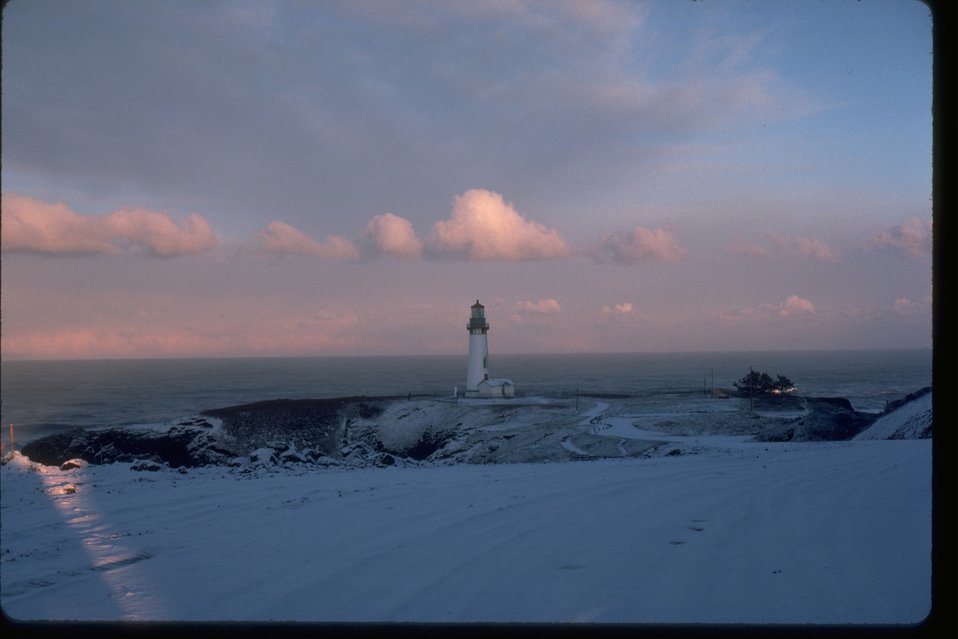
Sunrise at Yaquina Head lighthouse after a snowfall.